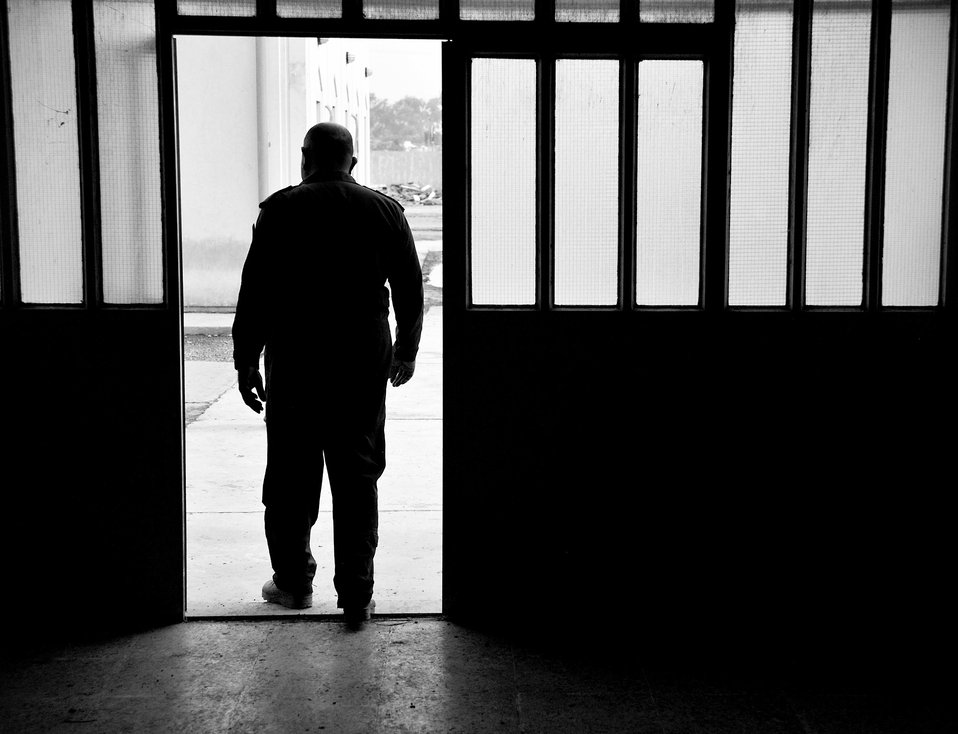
Airmen build IAF foundation

The Iraqi Air Force Training School's commandant walks outside after a meeting with air advisors from the 821st Expeditionary Training Squadron Dec. 13, 2010, in Taji, Iraq. Airmen with the 821st ETRS work daily with the faculty and students at the school to help it become an enduring and self sufficient training pipeline for the Iraqi air force and Ministry of Defense.